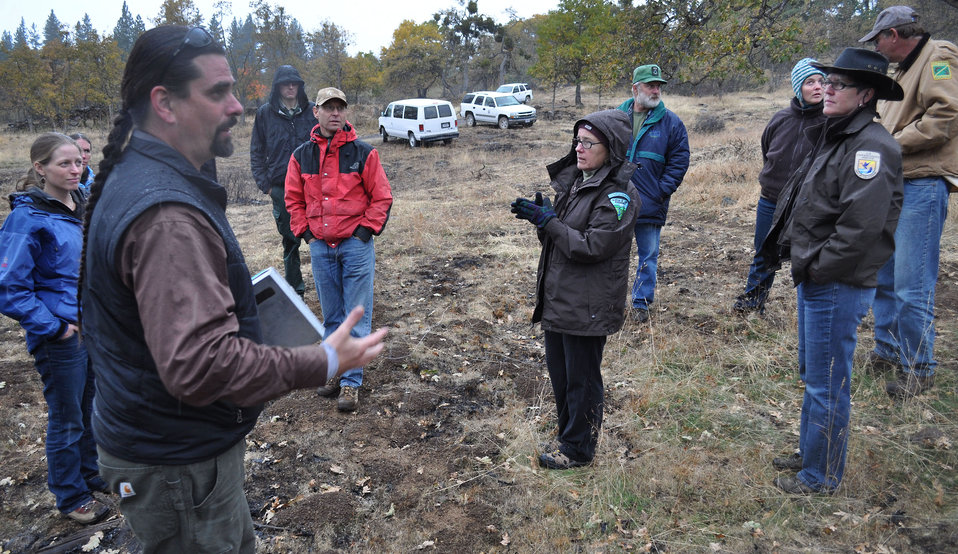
Marko Bey and partners